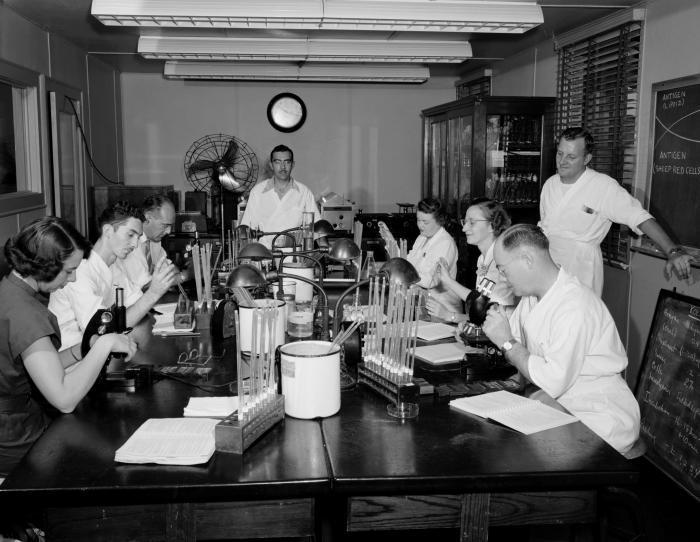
This 1950 photograph, taken on Centers for Disease Control's Chamblee campus, depicts a group of laboratorians conducting research in the Venereal Disease (VD) laboratory.